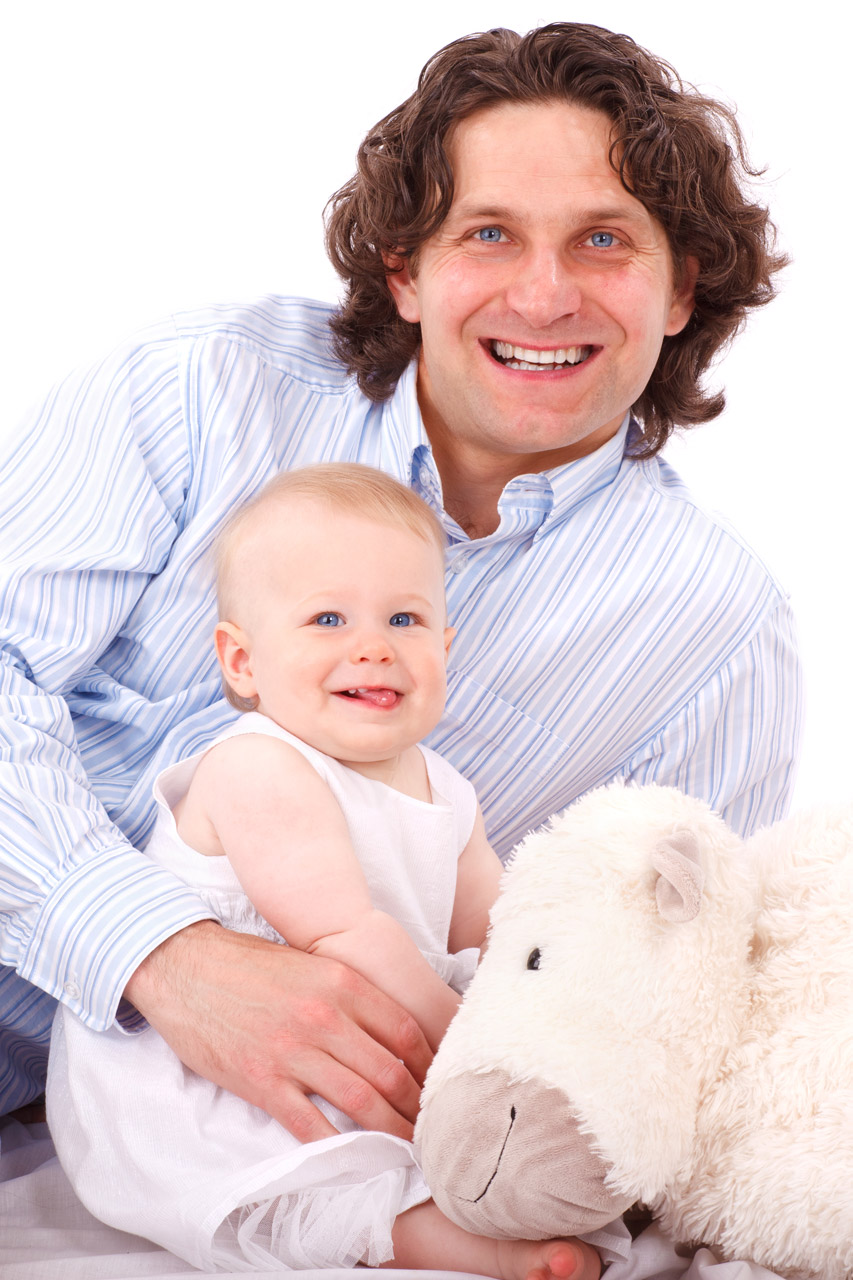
Father and daughter

Father with his daughter smiling isolated on white background.